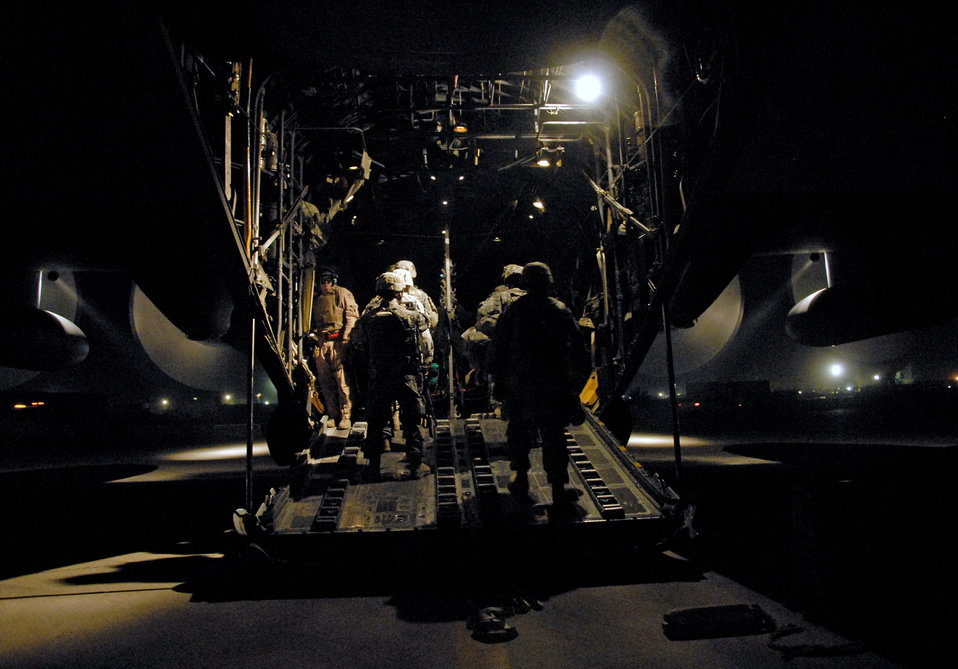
Special delivery

Senior Airman Joel Pfaff stands next to the rear left troop cargo door ensuring all passengers make it onboard safely during a passenger/cargo mission May 13 to an air base in Iraq. Airman Pfaff is a C-130 Hercules loadmaster with the 737th Expeditionary Airlift Squadron deployed from Dyess Air Force Base, Texas, and the Soldiers returning home from a 14-month deployment are from the A Battery, 1-10 Field Artillery, 3rd Brigade Combat Team, 31st Division out of Fort Benning, Ga.